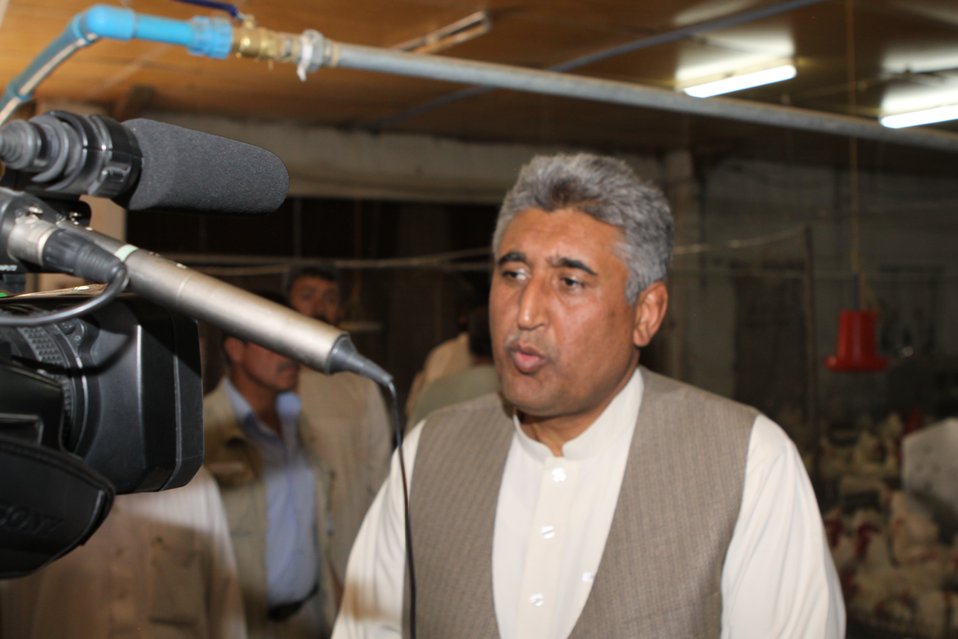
Bolan Poultry Farm